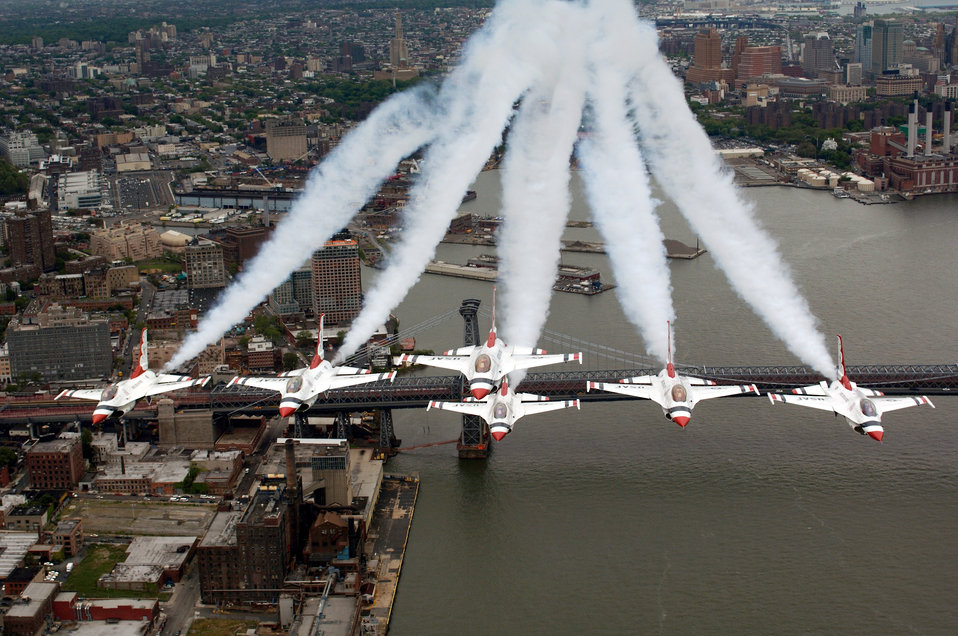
New York, New York

NEW YORK -- Six F-16 Fighting Falcons with the U.S. Air Force Thunderbirds aerial demonstration team fly in formation over New York City prior to an air show recently.